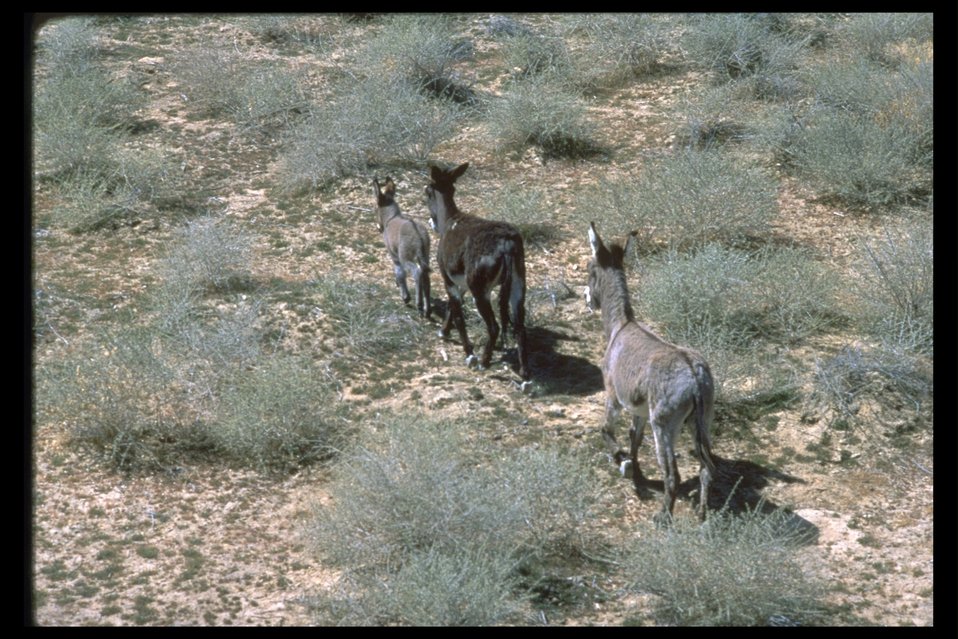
Wild Burros on the range.